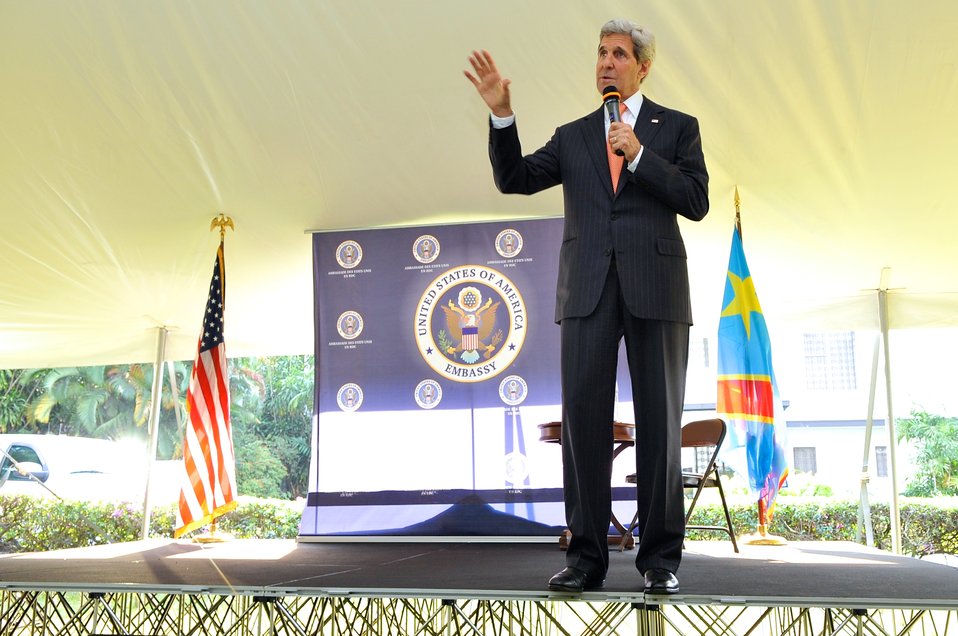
Secretary Kerry Addresses Members of Embassy Kinshasa

U.S. Secretary of State John Kerry addresses employees of Embassy Kinshasa during a visit to the Democratic Republic of Congo on May 3, 2014.